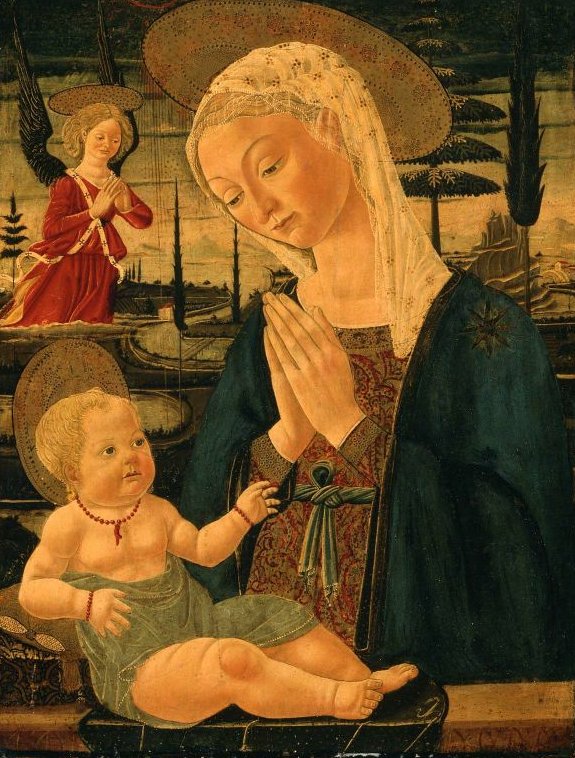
'Virgin and Child with an Angel' - Bernardo di Stefano Rosselli or Master of the Via Romana Lunette